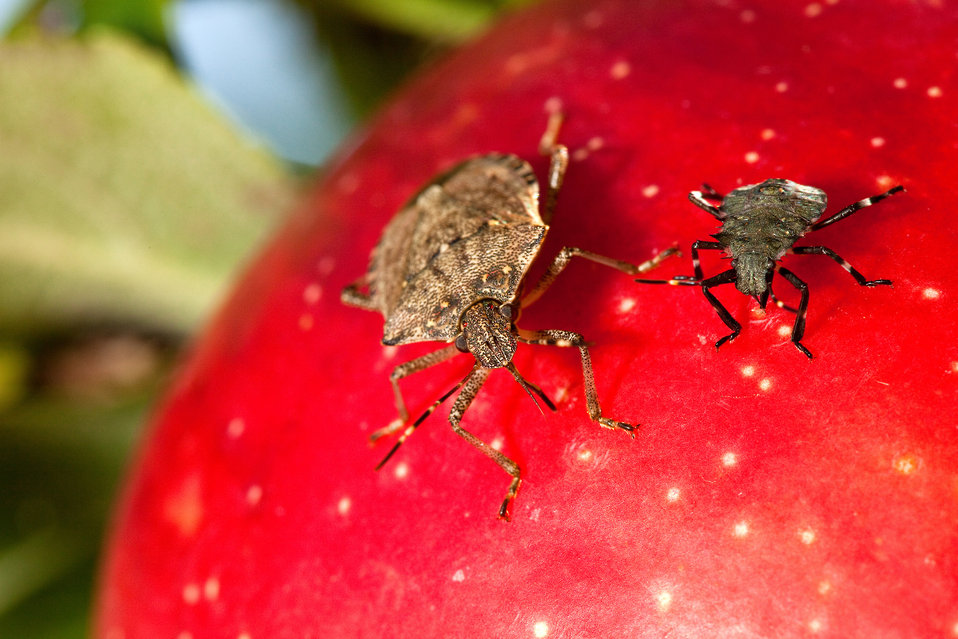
Adult and late-instar nymph stink bugs (Halyomorpha halys) feed on a Honey Crisp apple, a popular cultivar among consumers, at the U.S. Department of Agriculture (USDA) Agriculture Research Service (ARS) laboratory in Beltsville, MD on Aug. 29, 2012.